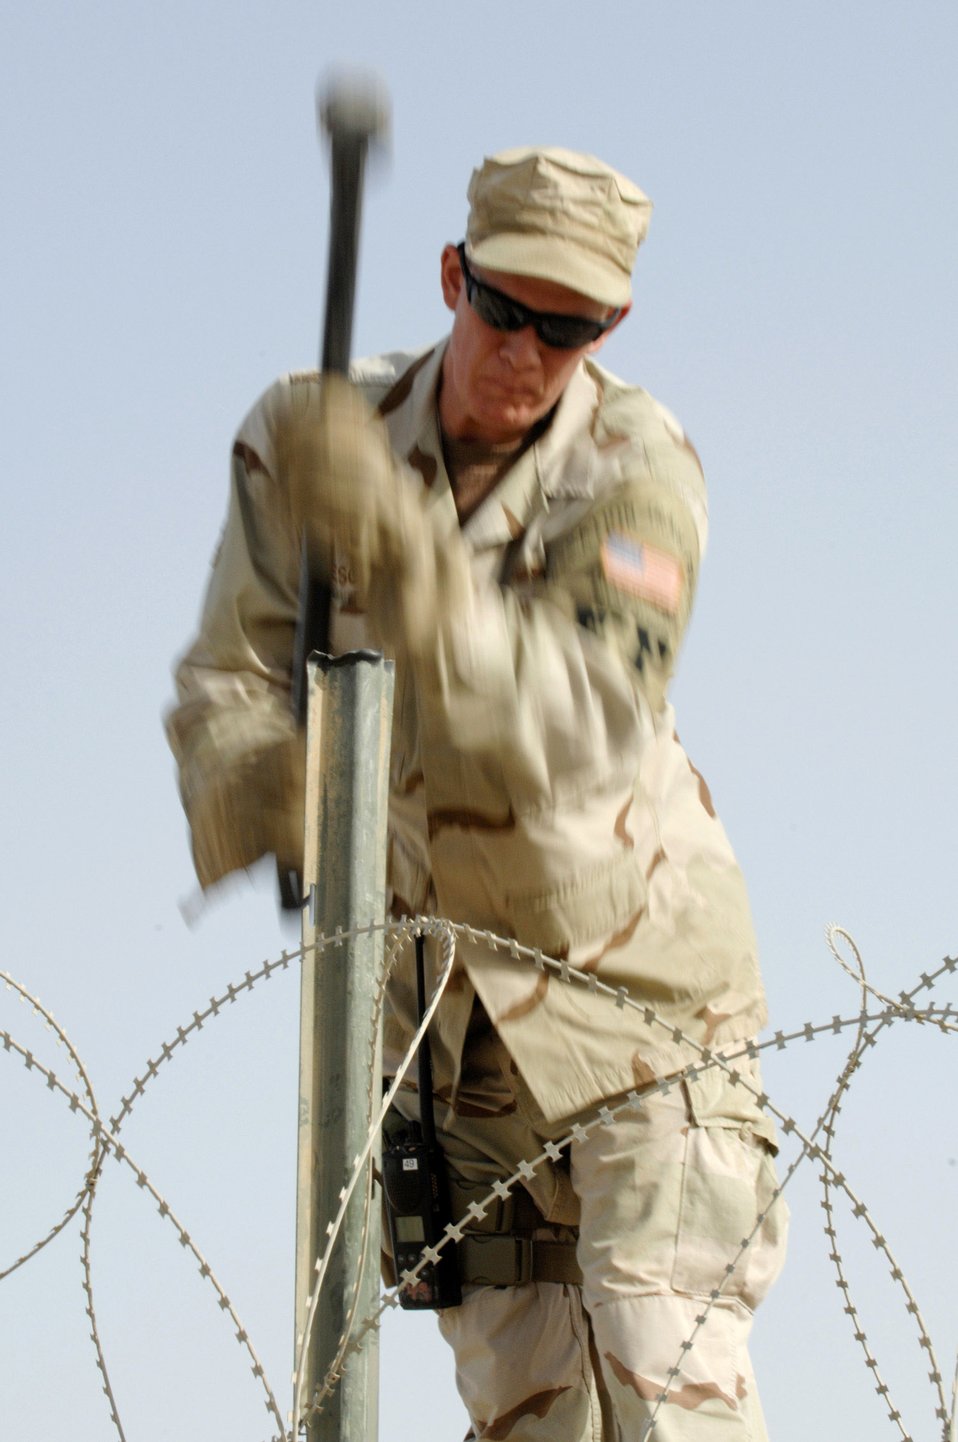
Wired for sound protection

Tech. Sgt. Hunter Lescoe pounds a stake in while installing concertina wire on a wall to protect one of the compounds on Ali Air Base, Iraq. Sergeant Lescoe is a member of the 407th Expeditionary Security Forces Squadron's Force Protection Flight. The flight is responsible for monitoring local and third country nationals to detect suspicious activity, augmenting security forces during increased threat levels, as well as monitoring and maintaining installation security measures.